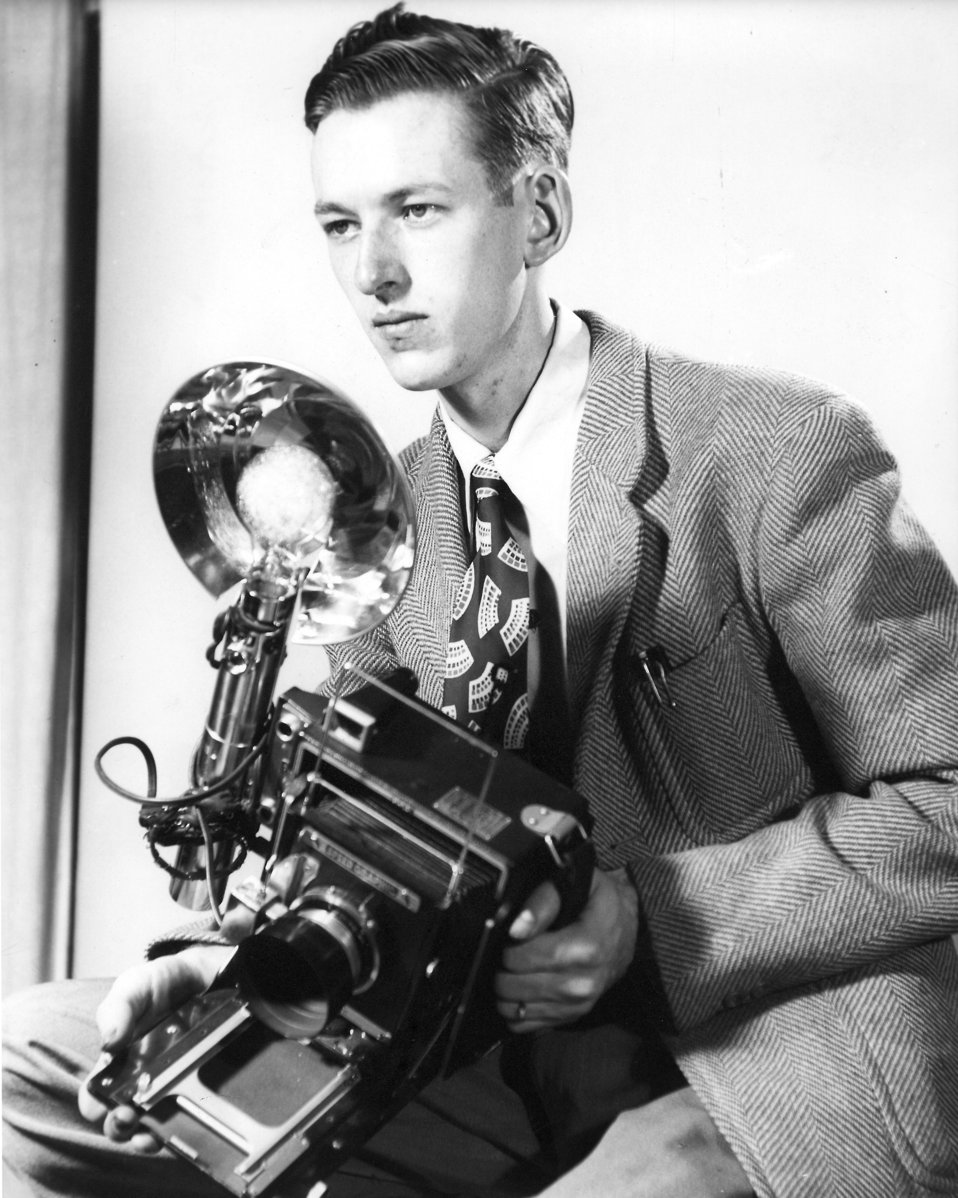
Ed Westcott Oak Ridge

DOE photo Ed Westcott Oak Ridge Tennessee 12-12-1942